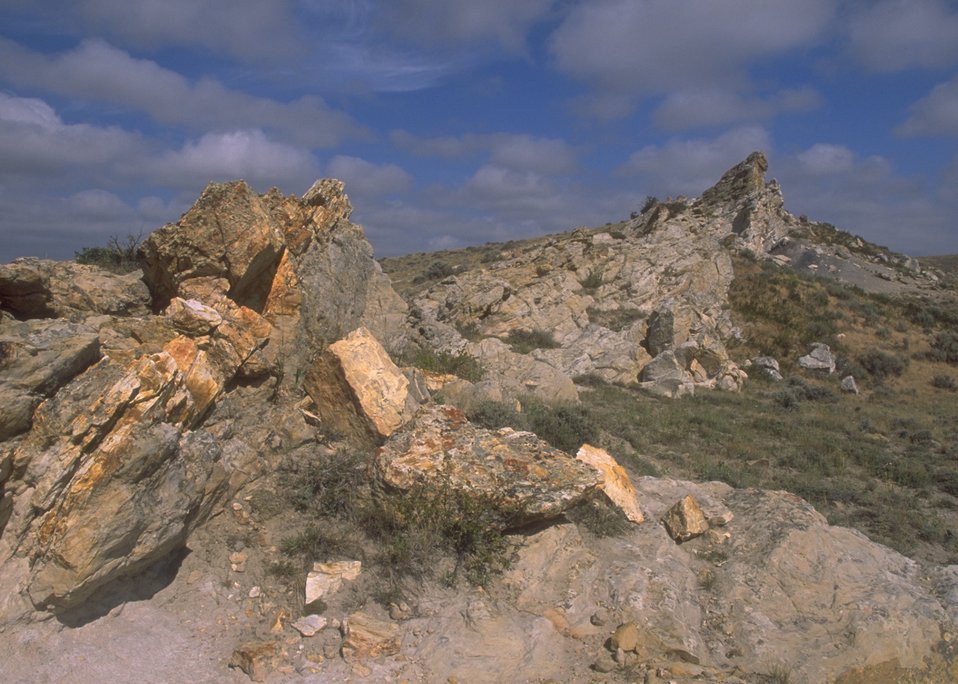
Rock Avenue area along the Oregon Trail, Casper Field Office.